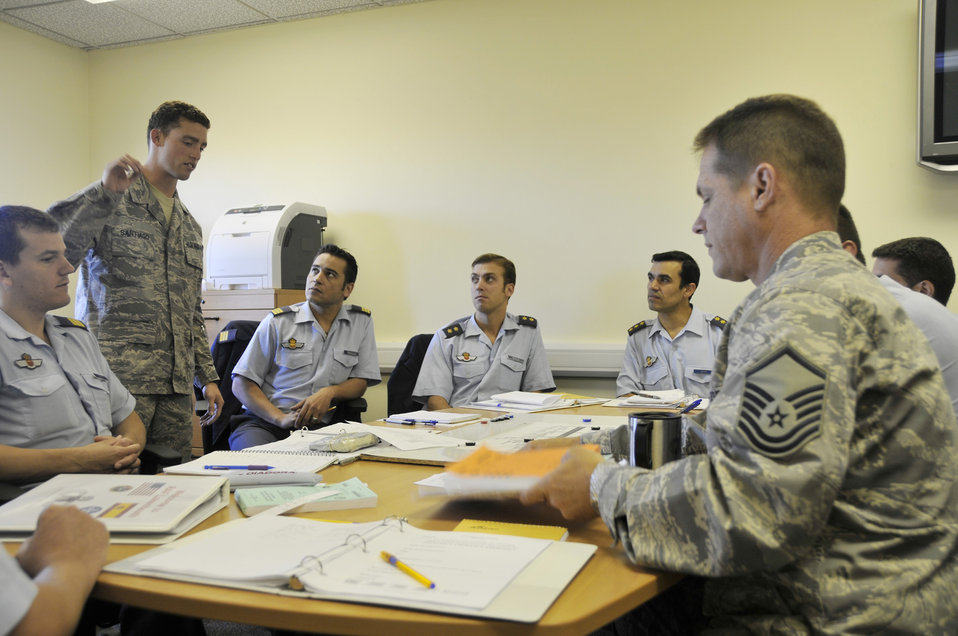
Lakenheath air traffic controllers pick up NATO training mission

Senior Airman Carlos Santiago (standing left) instructs Spanish air traffic controllers on the ground control procedures for a NATO location while Master Sgt. James Armstrong (right) instructs the same students on the local control position procedures for the same location July 10 at Royal Air Force Lakenheath, England. The Spanish controllers were at RAF Lakenheath to become familiar with American phraseology and procedures prior to their deployment for NATO. Airman Santiago is a 48th Operations Support Squadron air traffic controller. Sergeant Armstrong is the 48th OSS air traffic control watch supervisor.